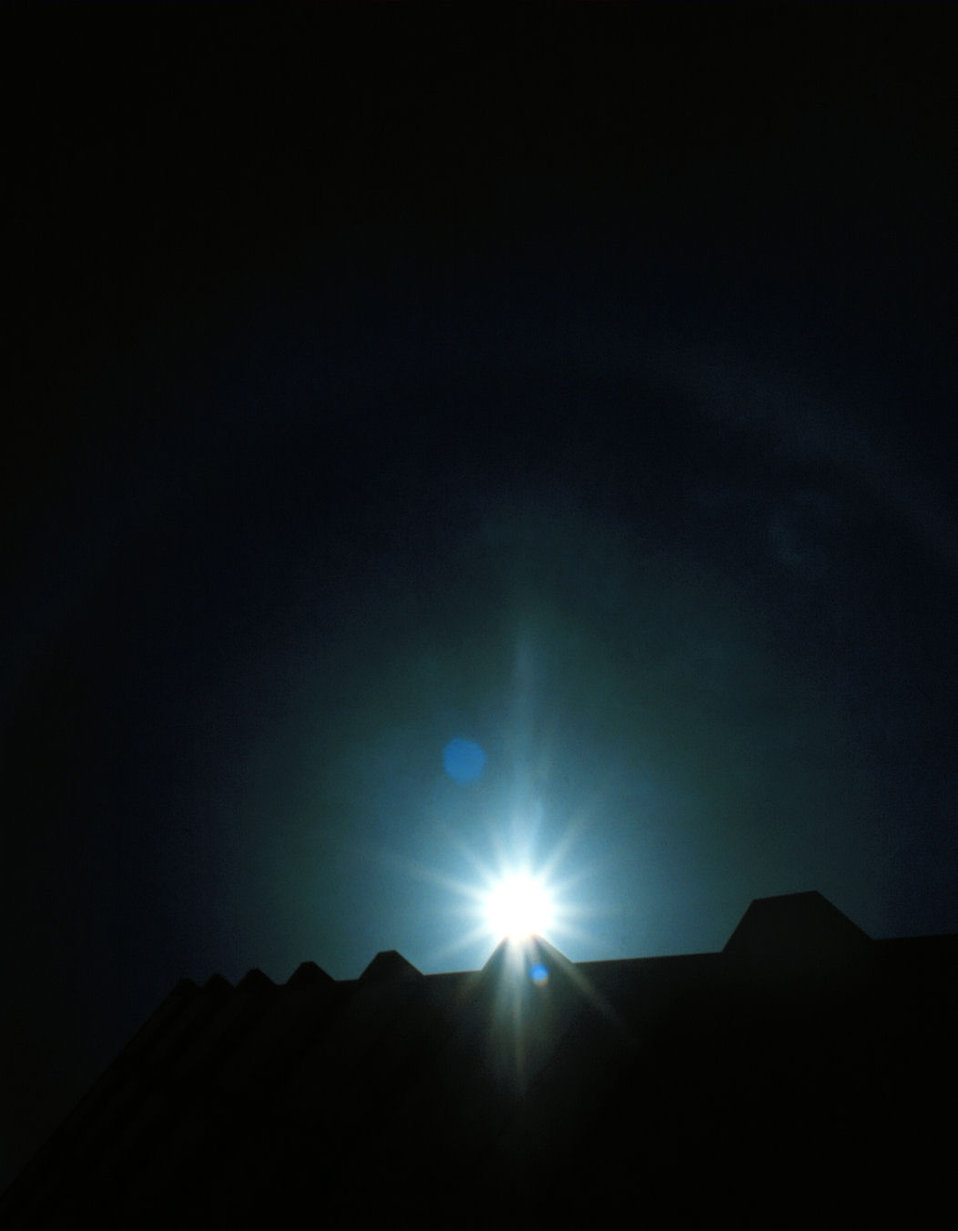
Halo